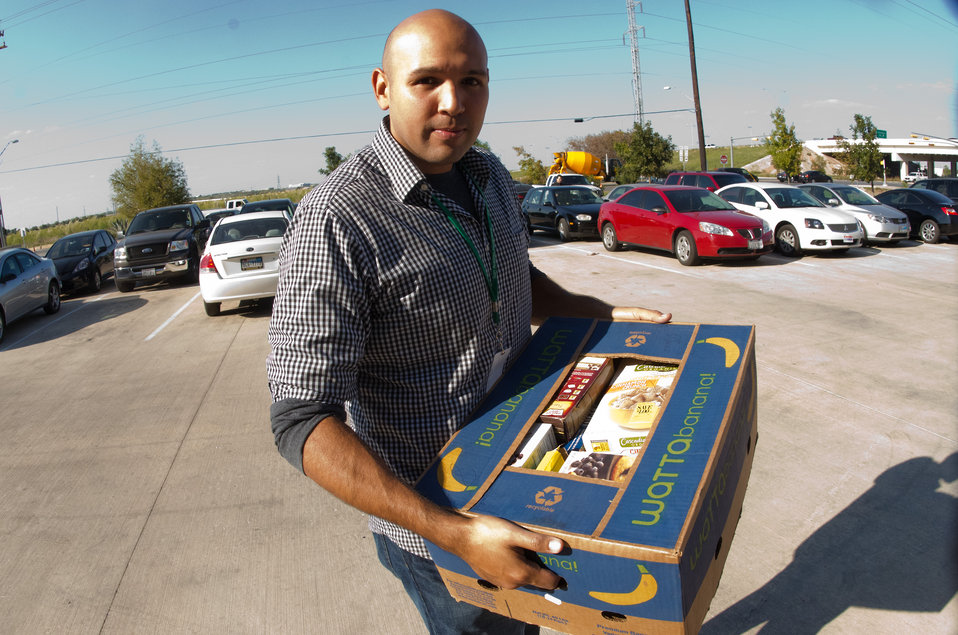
San Antonio Food Bank (SAFB) Outreach Specialist Seth Villalobos made a personal delivery of provisions on Monday, October 31, 2011, to a family in San Antonio, TX whose apartment unit was consumed by a fire. Left with the clothes they are wearing they were referred to the San Antonio Food Bank where Villalobos listened and determined what their immediate needs were. He talked about government programs that could address their needs, and benefits that could help them rebuild their lives. During that initial visit, the mother and daughter applied for Children’s Medicaid and Women, Infants & Children (WIC) benefits, later they were briefed about the United States Department of Agriculture’s Supplemental Nutrition Assistance Program (SNAP) and the Federally funded, state administered Temporary Assistance for Needy Families Benefits (TANF). Villalobos made the trip to this family’s temporary home hoping to make the displaced family’s first evening a little easier. In the box were provisions from the USDA and other contributors to SAFB.
The San Antonio Food Bank is a non-profit organization that serves as a clearinghouse receiving and storing truckloads of donated food, produce, and other grocery. SAFB distribute these items to over 500 service agencies that help people in need.
“We couldn’t do what we do without our partnership with USDA’” said President and CEO Eric Cooper. SAFB serves 16 counties in Southwest Texas and states, “Nearly one out of every four children and one out of every five adults in Southwest Texas lives in poverty and has difficulty meeting basic nutritional needs.” According to SAFB, sixty-five percent of the people requesting emergency food have children. USDA photo by Lance Cheung.
www.fns.usda.gov/fns/
www.fns.usda.gov/snap/ www.fns.usda.gov/fdd/programs/tefap/